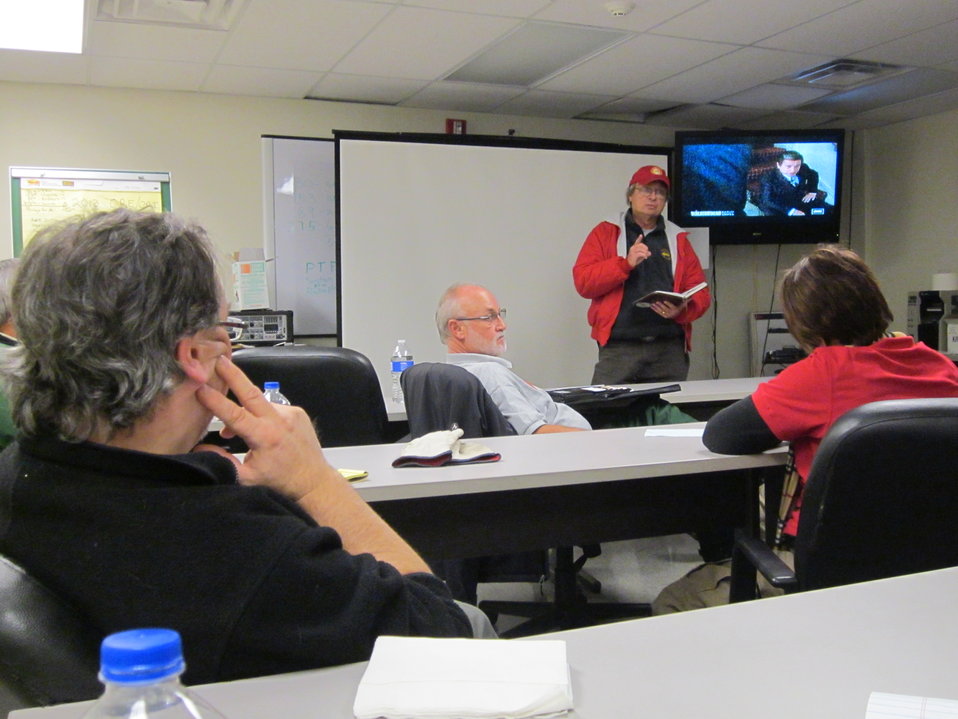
Red Team briefing

November 1, 2012: Tony Wilder, Incident Commander of the Southern Area Type 1 Red Incident Management Team briefs team members at the Air National Guard at Yeager airport. The team's assignment was to clear roads in West Virginia from fallen trees and to help manage FEMA logistical staging areas in Martinsburg and Charleston. Wilder is a fire management officer at Mississippi Sandhill Crane National Wildlife Refuge.